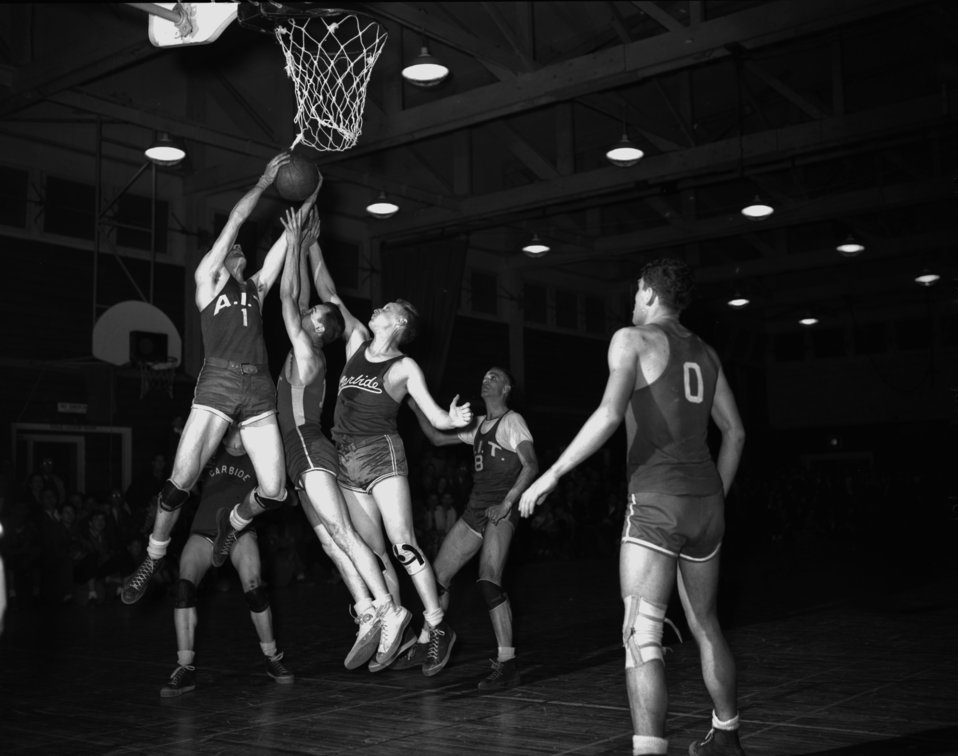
Mens Basketball Carbide vs AIT Oak Ridge

3354-12w DOE photo Ed Westcott 3-20-1947 Oak Ridge Tennessee